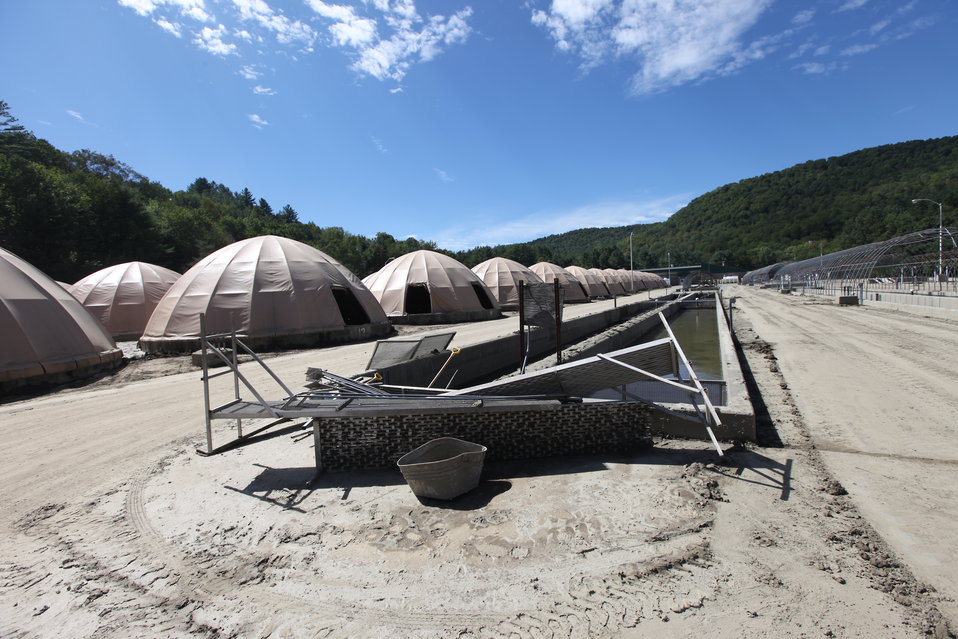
Storm damage relief at White River NFH